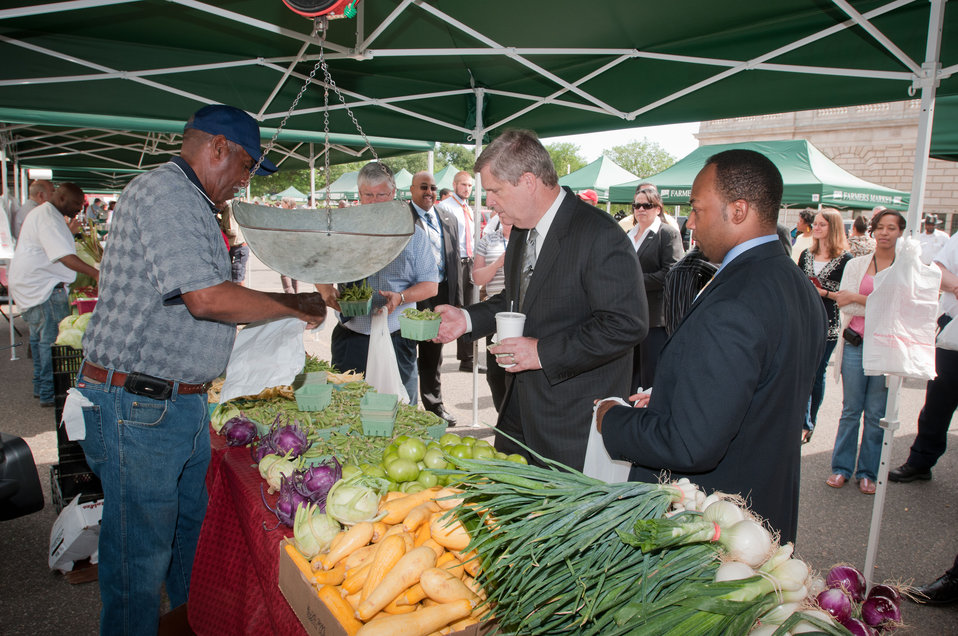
Penn Farm’s James Smith (left), of Westmorland County, VA helped Agriculture Secretary Tom Vilsack (center) with his purchase of red potatoes and sugar snap peas at the USDA Farmers Market on Friday, Jun 3, 2011 in Washington, DC. Secretary Vilsack purchased fresh, local fruits and vegetables, baked goods to start USDA’s participation in the 'Feds Feed Families' food drive. The USDA Farmers Market is located at the corner of 12th Street and Independence Avenue and will be open every Friday from 10:00 a.m. - 2:00 p.m. through November 18th. Special events will be happening every Friday at the market and at the adjacent People's Garden all season.